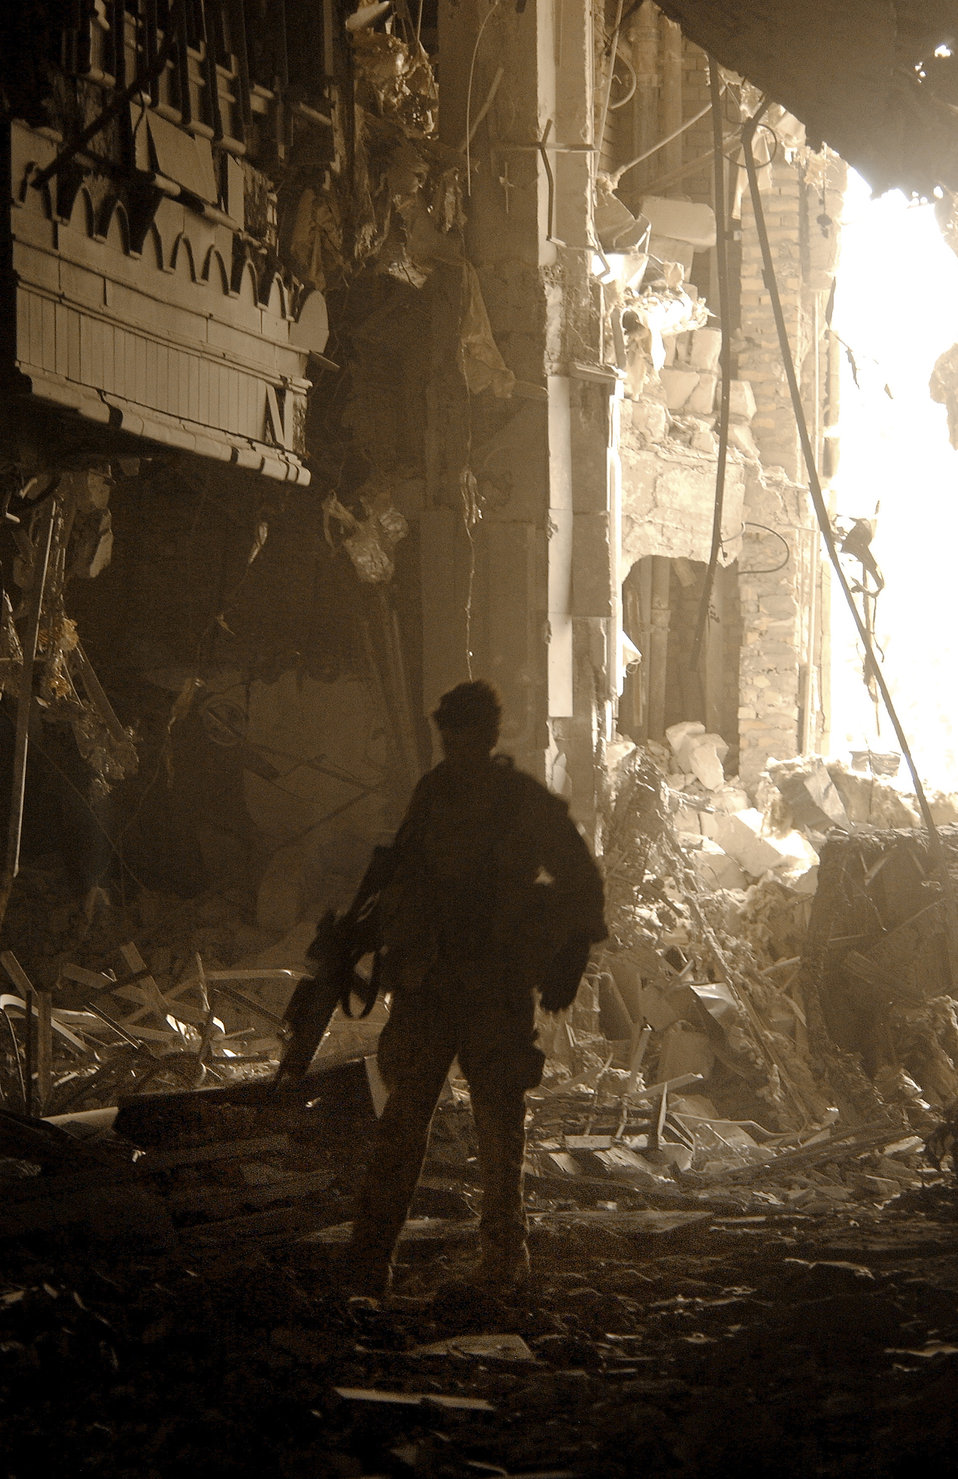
Saddam has left the building

OPERATION IRAQI FREEDOM -- A combat control team member inspects the rubble at one of Saddam Hussein's palaces. The team is assigned to Baghdad International Airport, which is a primary base of operations for U.S. troops, cargo and humanitarian airlift for Operation Iraqi Freedom.